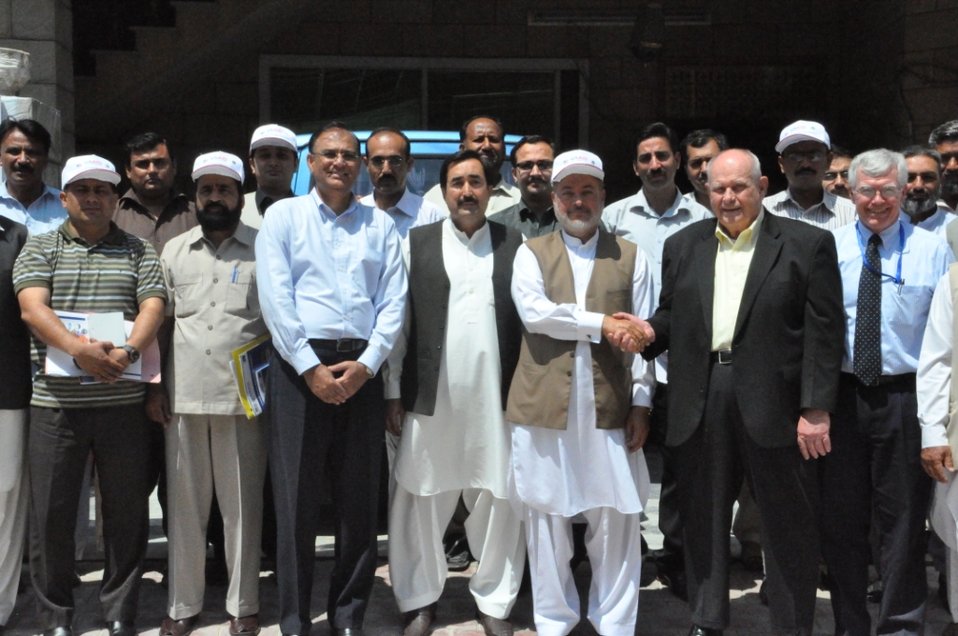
Usaid To Provide Technical Assistance To Improve Efficiency Of Tube-Wells In Iesco By Installing 2600 Lt Capacitors at Islamabad on April 26, 2012